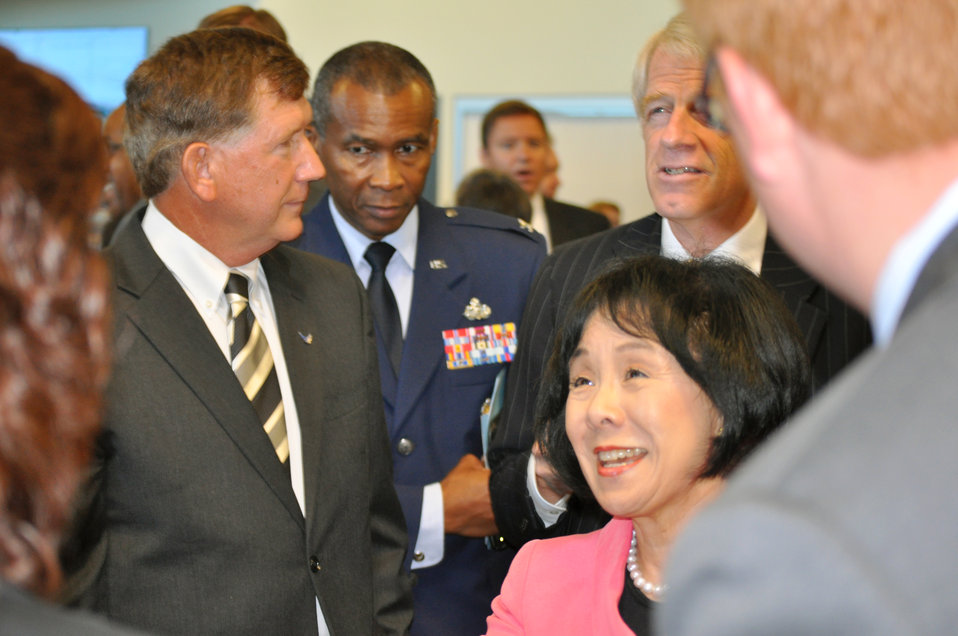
Transfer of land to McClellan Business Park

Terry Yonkers (left), assistant secretary of the Air Force for installations, environment and logistics and California Congresswoman Doris Matsui greet community officials Aug. 12, 2010, following a ceremony to transfer some 560 acres of the former McClellan Air Force Base in Sacramento, Calif., to the McClellan Business Park to provide space for a variety of industrial facilities, office buildings, a hotel and housing.